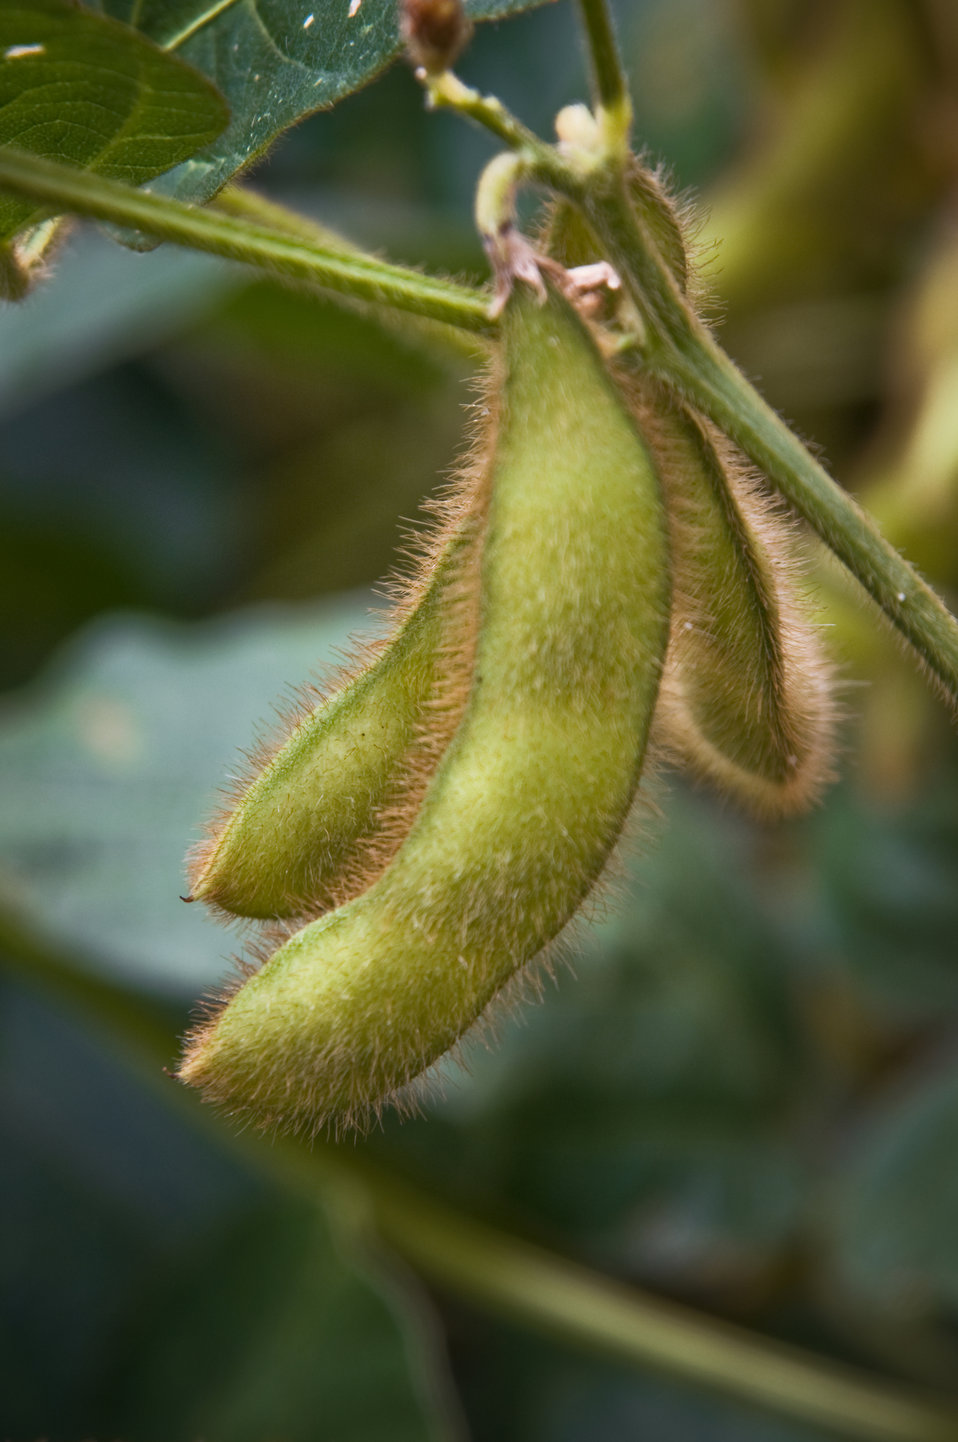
The Power Plant garden at the National Arboretum in Washington, D.C., displays a variety of plants that may provide a valuable and renewable source of bioenergy for America. Bioenergy is a renewable energy made available from materials derived from biological sources. Soybeans are a legume native to East Asia and have the potential to be an important oil producing plant for biodiesel fuel. Most of the soybeans planted in the U.S. are for used for edible products. The market price for soybeans has risen as a result of the increased demand for soy and this reduces soybean’s economic competiveness for biodiesel production. Soy biodiesel has better lubricant qualities than petroleum diesel and can add years to an engine’s life while reducing sulfur oxide and sulfate emissions, which contribute to acid rain. This photograph shows soybeans growing in the Power Plant garden at the National Arboretum in Washington, D.C. on August 19, 2008.